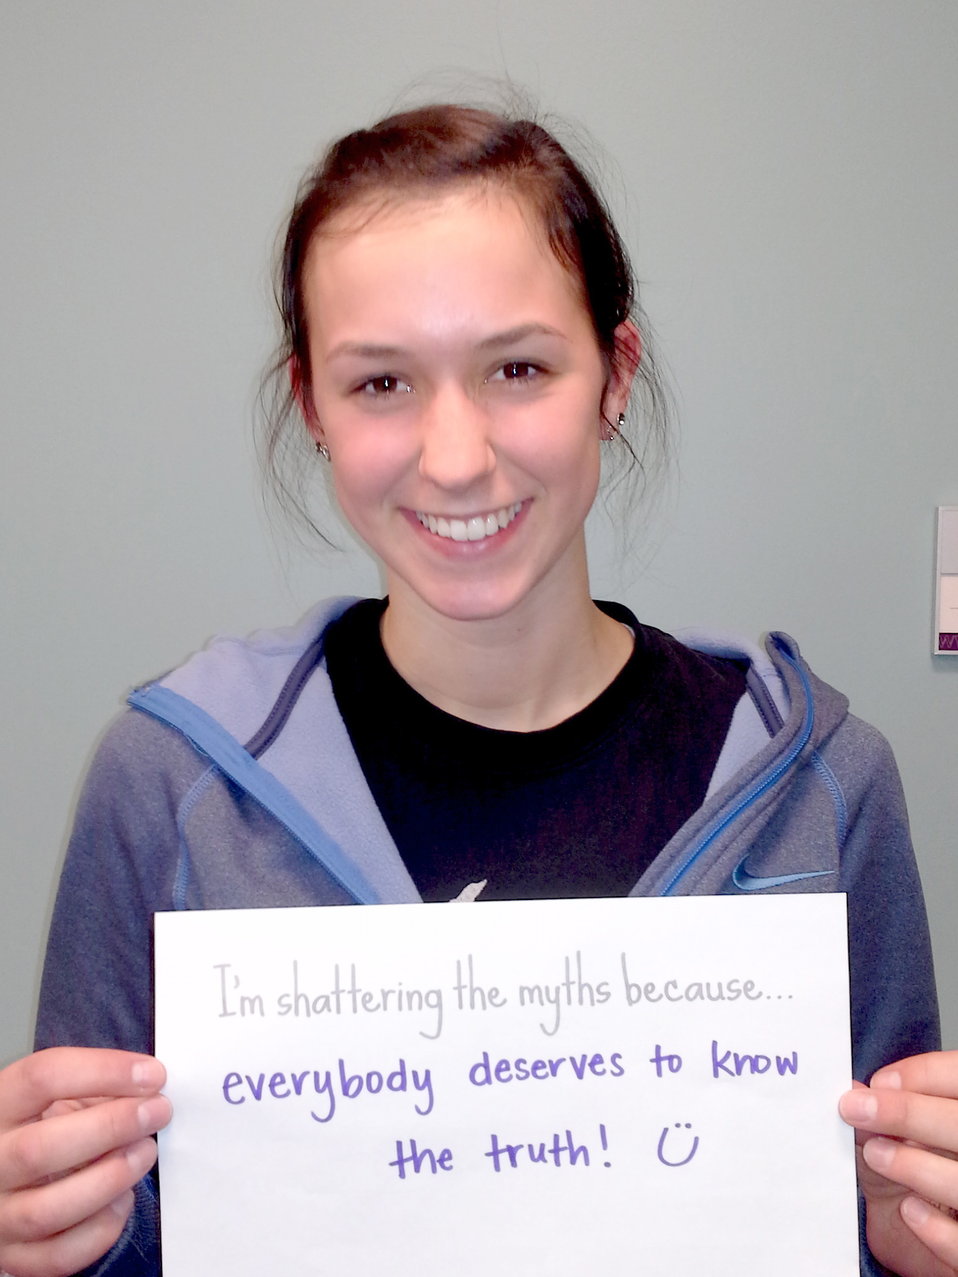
Shattering the Myths campaign in Winona, Minnesota